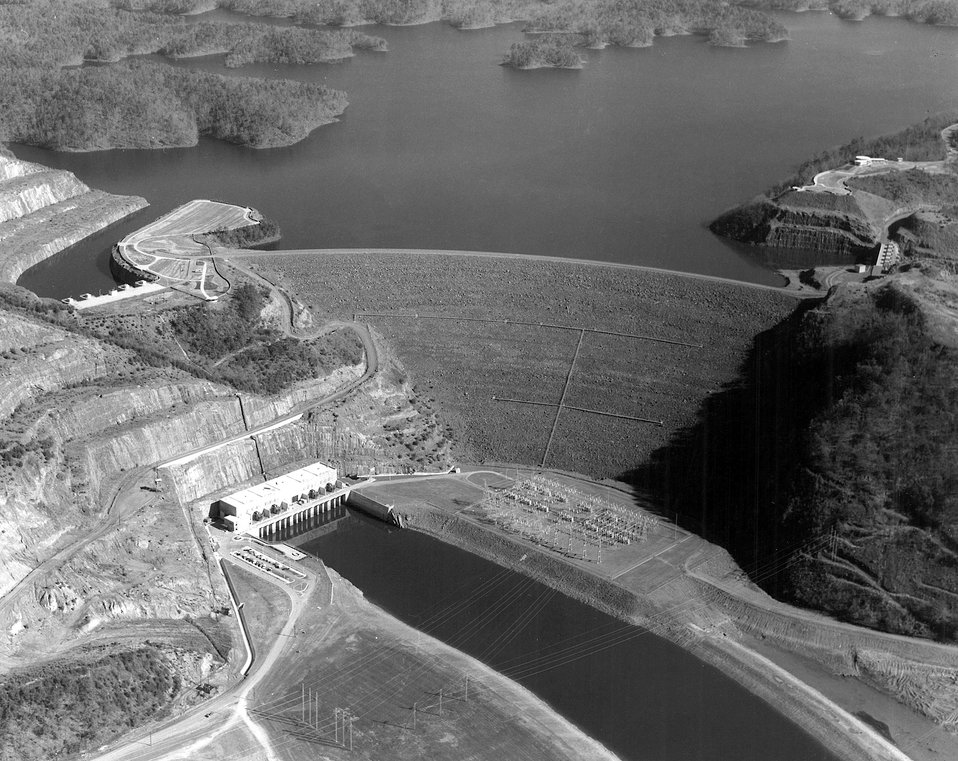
Carters Powerhouse & Dam. c. undated